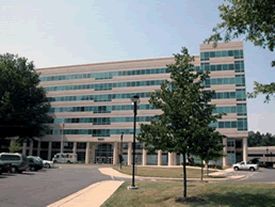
NSC building